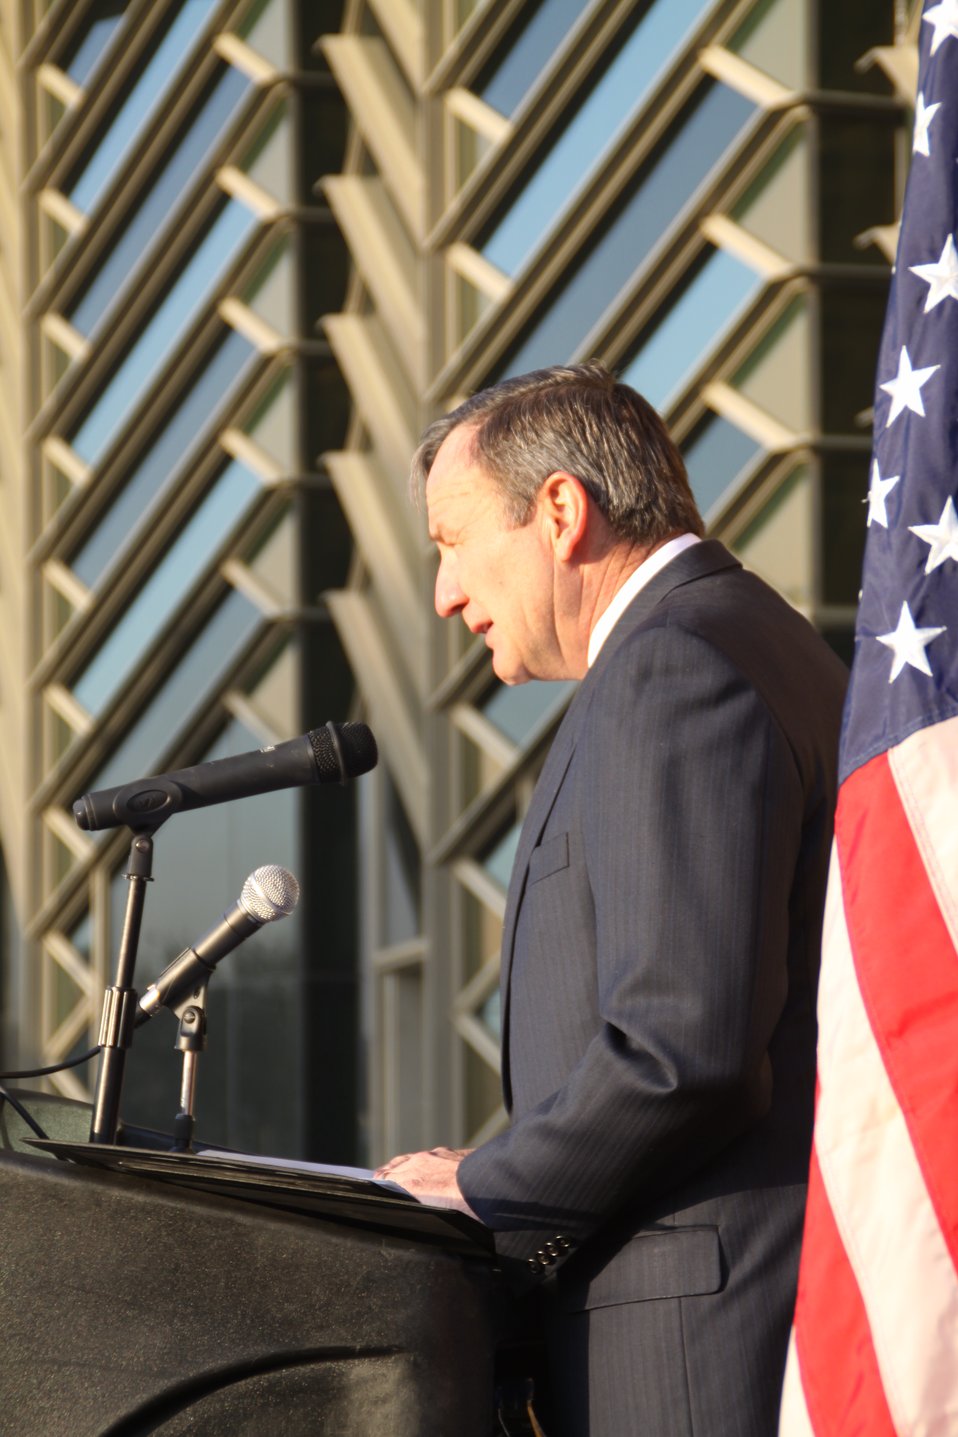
Ambassador Eikenberry